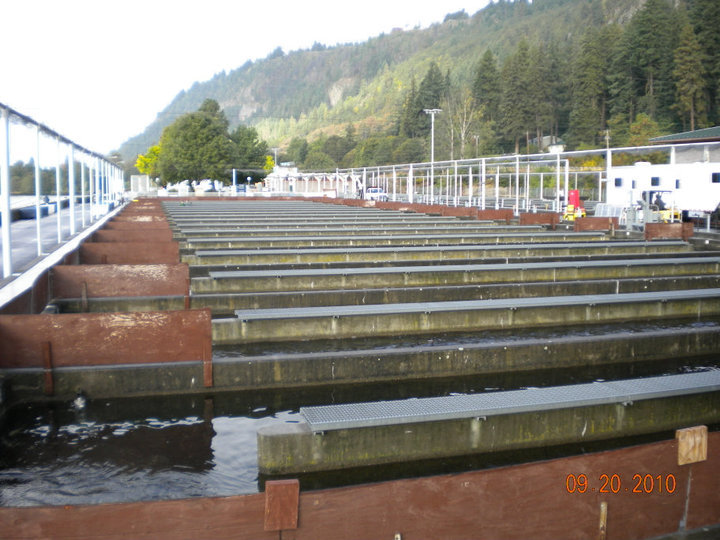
Raceways - Spring Creek NFH